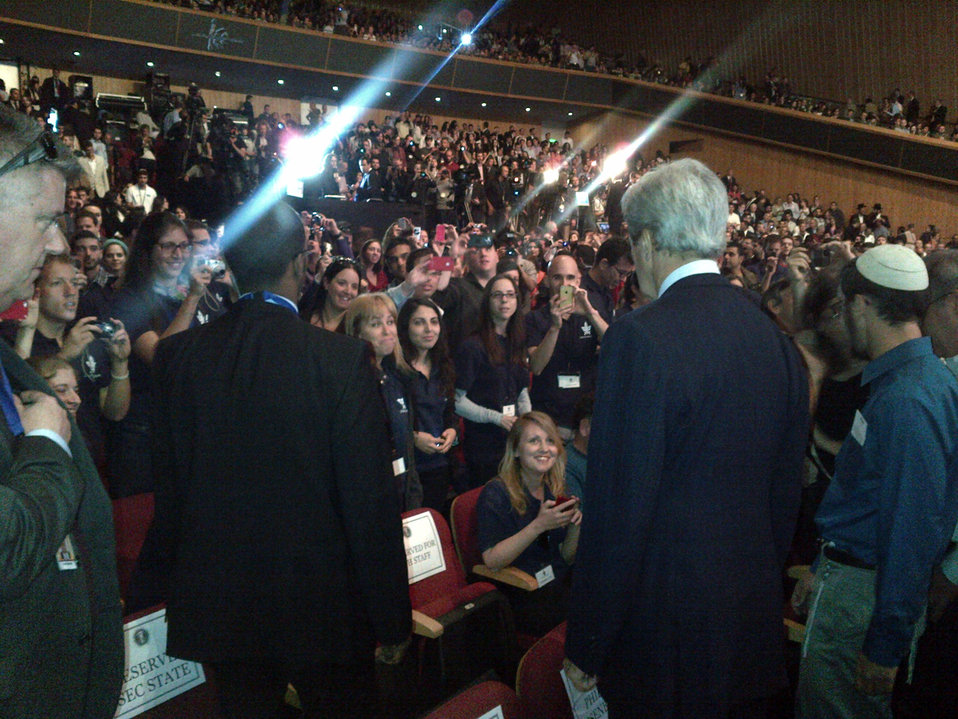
Secretary Kerry Engages With Students in Jerusalem

Israeli students welcome U.S. Secretary of State John Kerry prior to President Obama’s speech at the Jerusalem Convention Center on March 21, 2013.